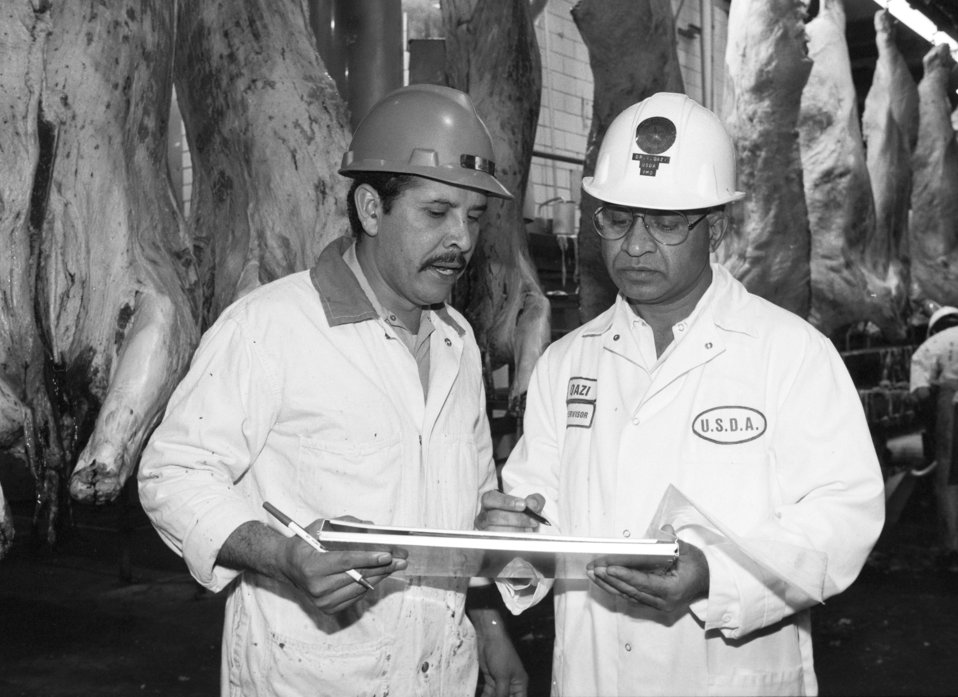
U.S. Department of Agriculture (USDA) Food Safety Inspection Service (FSIS) inspectors inspect beef using a Streamline Inspection System (SIS) at a processing plant in Plainview, TX on January 22, 1991.